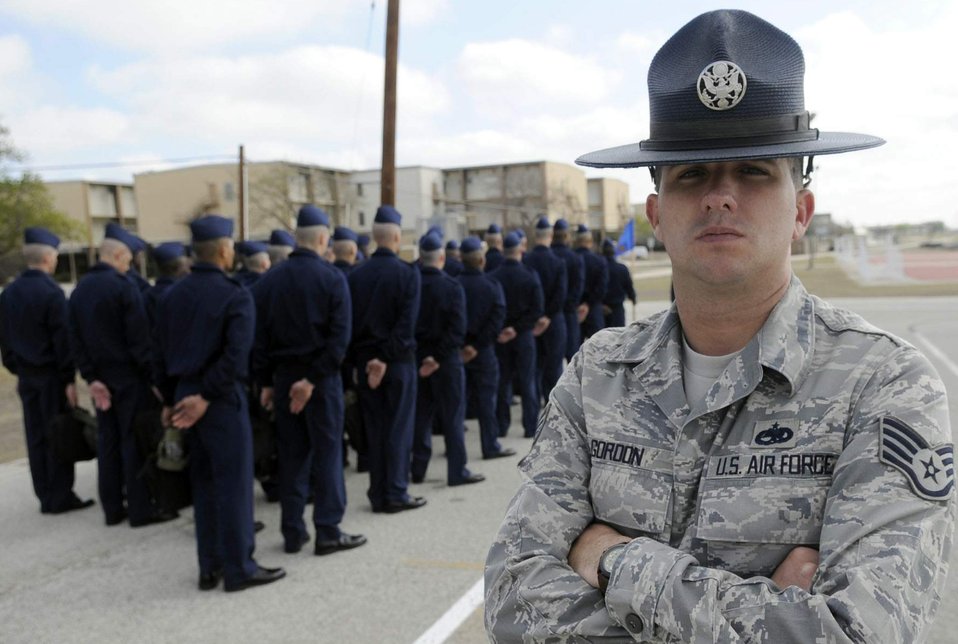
Basic training

Staff Sgt. Christopher R. Gordon is a military training instructor at Lackland Air Force Base, Texas. He is the face of the Air Force for hundreds of trainees throughout the year and molds recruits through a recently overhauled and expanded Air Force Basic Military Training that focuses on a ?warrior first? philosophy.